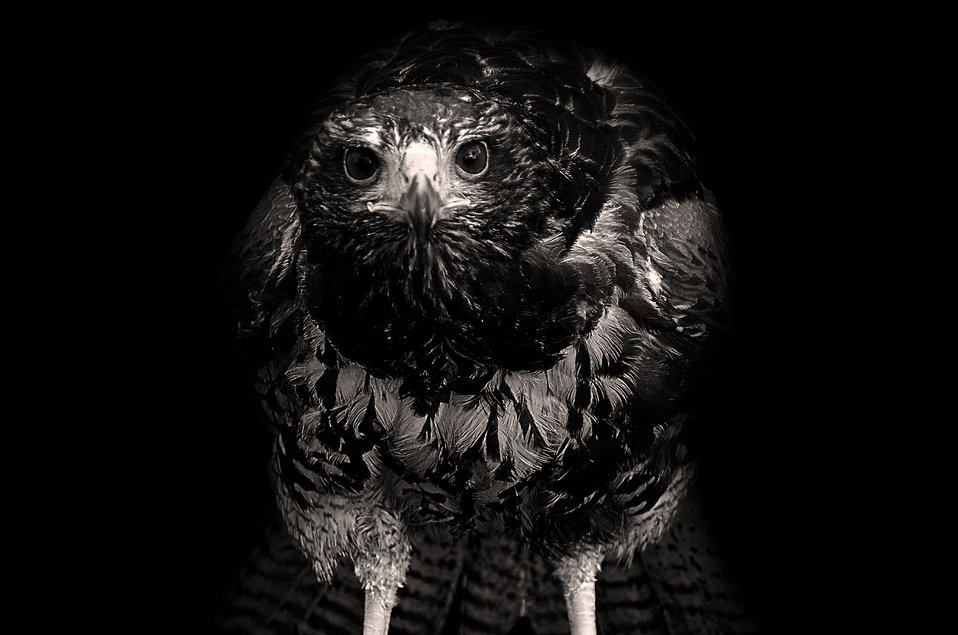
Hawk on the black background.